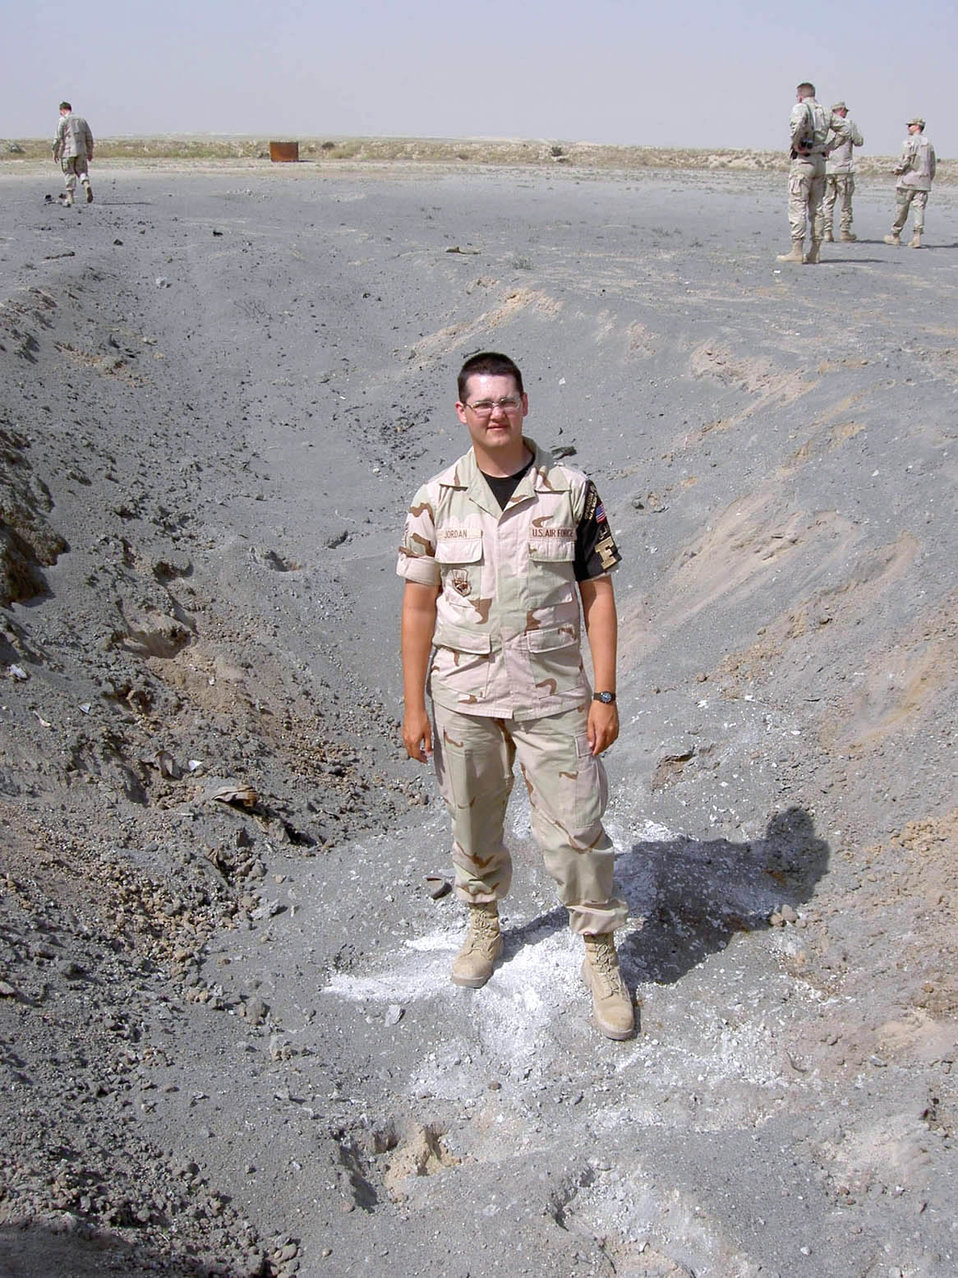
Airman finds, destroys UXO

SOUTHWEST ASIA -- Airman 1st Class Juan Jordan stands in the spot where the Russian-made bomb he discovered was destroyed. He found the bomb at a construction site at a forward-deployed location. He credits his deployment training with helping him recognize the unexploded ordnance. He is an avionics sensors maintenance apprentice deployed from the 9th Aircraft Maintenance Squadron at Beale Air Force Base, Calif.